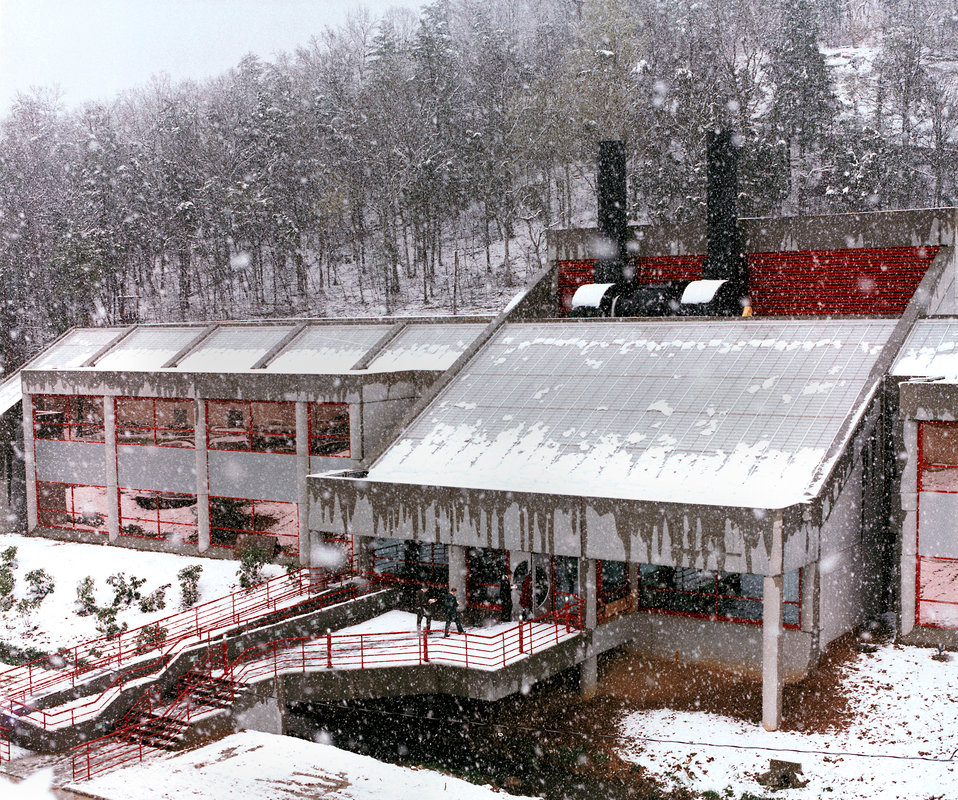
html High Temperture Materials Lab Oak Ridge

DOE photo by Lynn Freeny Oak Ridge Tennessee 1987